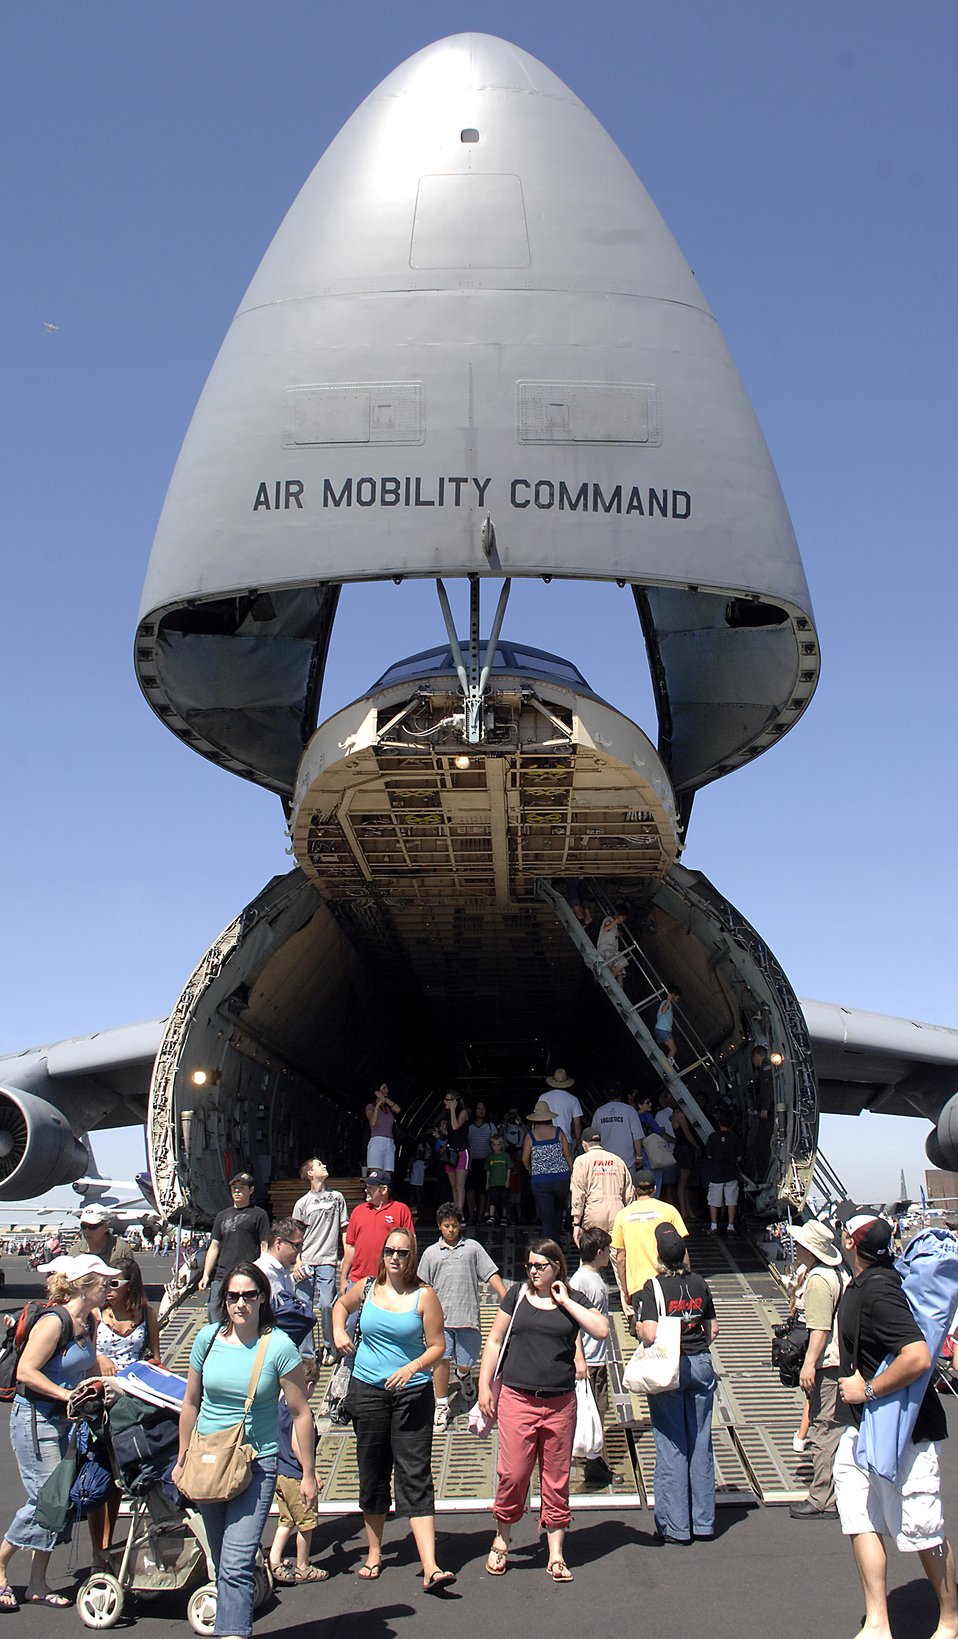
California Air Force Week

Spectators had the opportunity to tour a C-5 Galaxy at the California Capital Air Show in Sacramento, Calif., June 9. The air show was the last event of Air Force Week California. The purpose of Air Force Week is to inform and educate the American public about the importance and roles of the Air Force in America's national defense. More than 50,000 people attended the air show featuring the Air Force Thunderbirds and numerous Air Force aircraft.